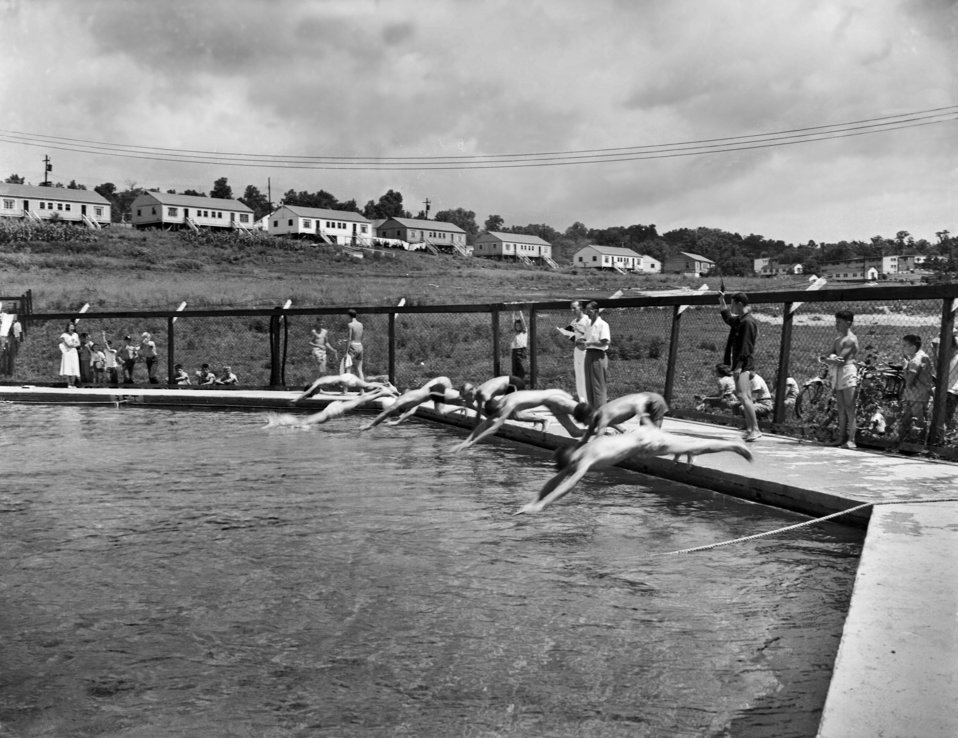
Recreation Swimming Meet Oak Ridge

005138-7a
DOE Photo by Lillian Stokes Swim meet at Oak Ridge Pool. Swimmers start with Oak Ridge neighborhood in background Oak Ridge Tennessee 8/5/1948